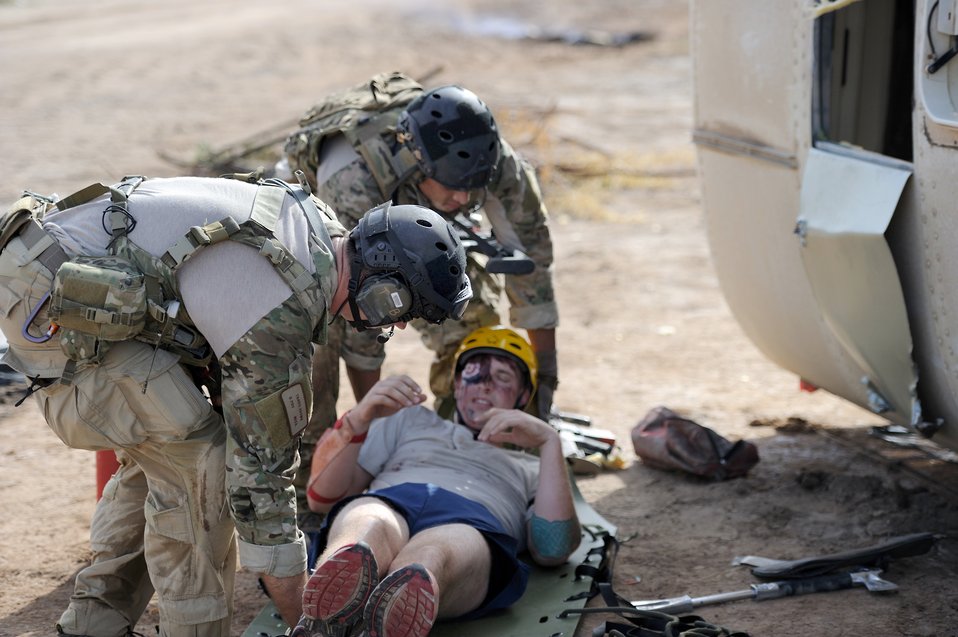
Airmen participate in African rescue exercise

A team of Air Force pararescuemen secures a